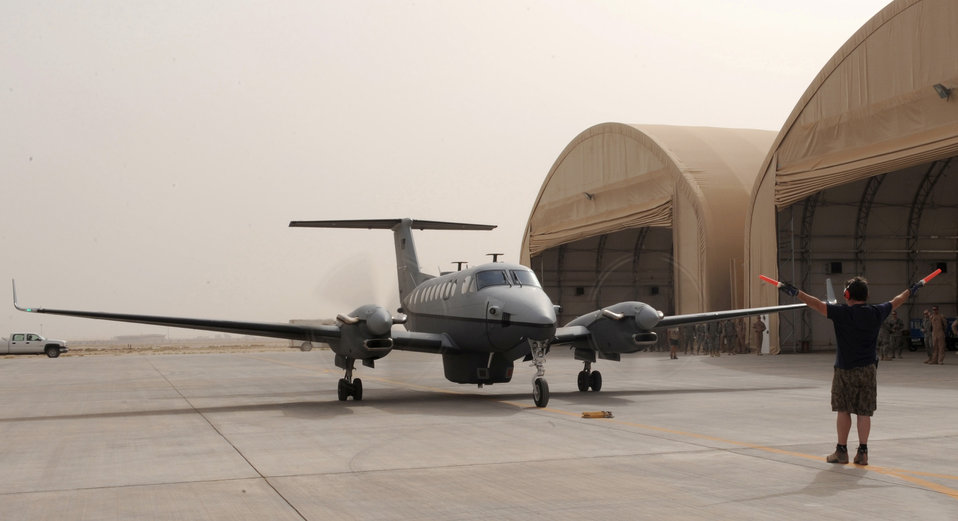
MC-12 joins the fight in Iraq

The Air Force's new MC-12 Liberty aircraft and the first one deployed in-theater taxies into an aircraft hangar June 8 at Joint Base Balad, Iraq. A medium-altitude manned special-mission turboprop aircraft designed for intelligence, surveillance and reconnaissance, MC-12 aircraft supports coalition and joint ground forces.